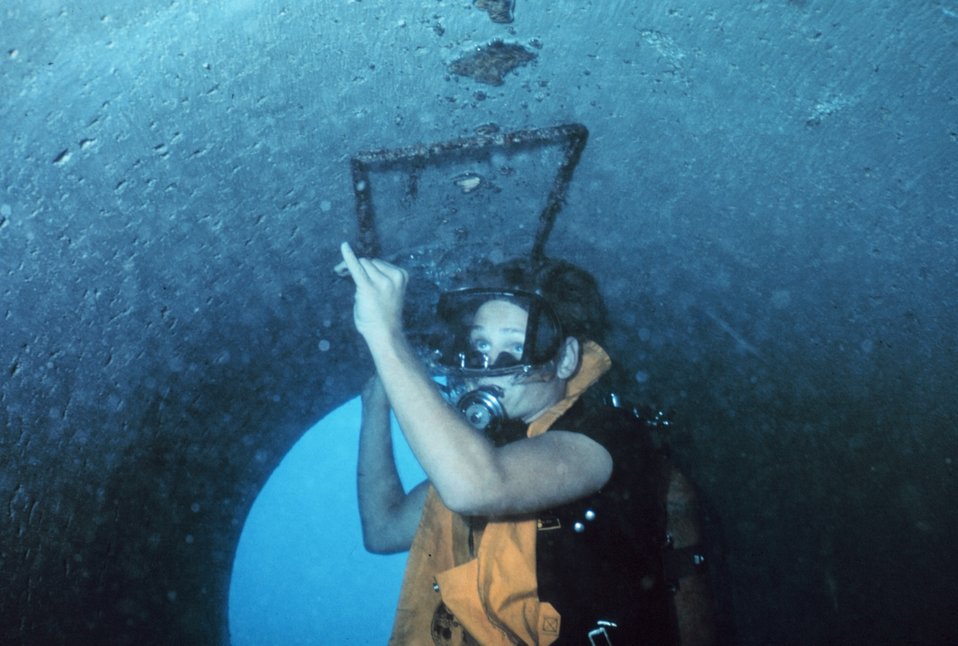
Installing a 1/4 square meter grid for counting invertebrate species attaching to interior, roof of pipe. This location was a distinct habitat type ideal for larval settlement of oysters, sponges, bryozoa, and tunicates.